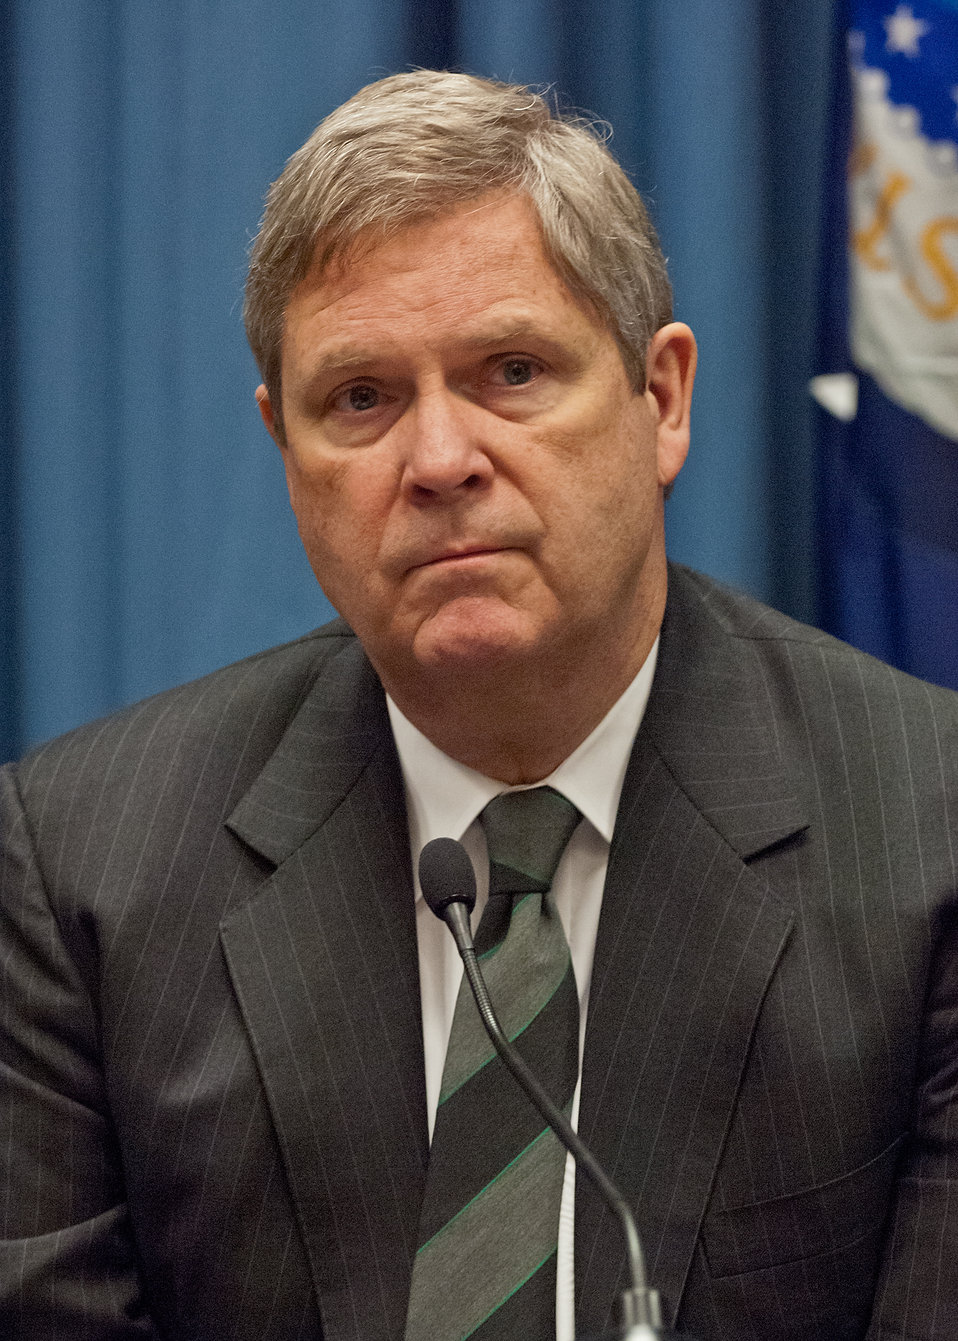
Agriculture Secretary Tom Vilsack listens to questions posed by members of commodity groups representing all aspects of agriculture. Secretary Vilsack and Lisa Jackson, Administrator, Environmental Protection Agency met with the commodity groups at the United States Department of Agriculture in Washington, D.C., to discuss mutual agricultural and environmental issues on Tuesday, December 14, 2011.